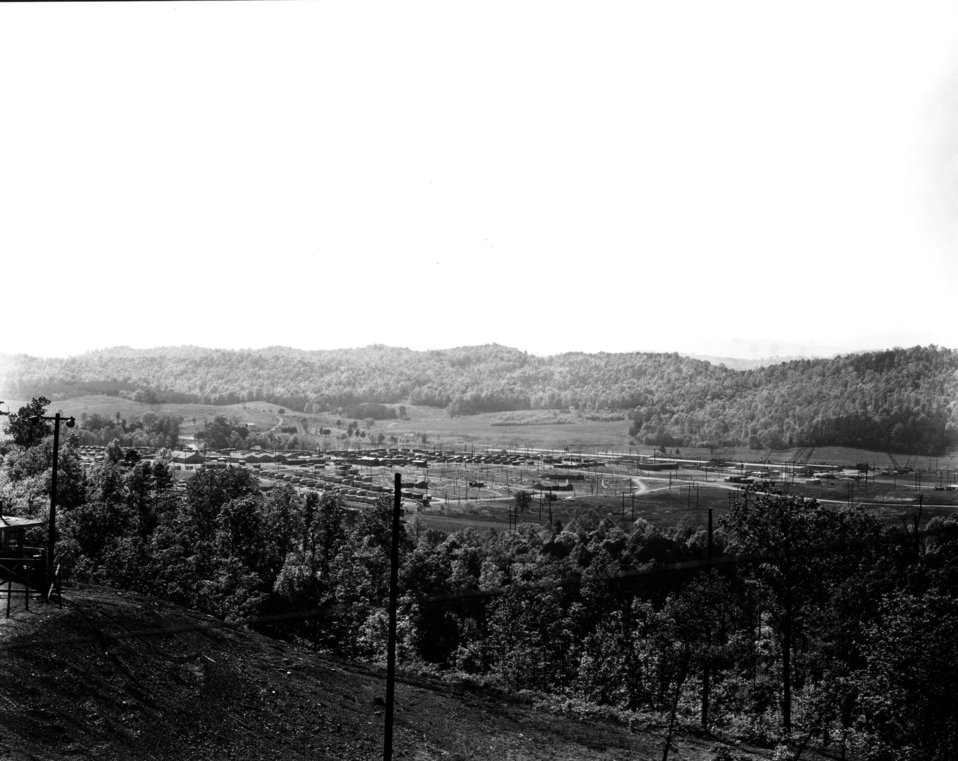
Aerial of Oak Ridge